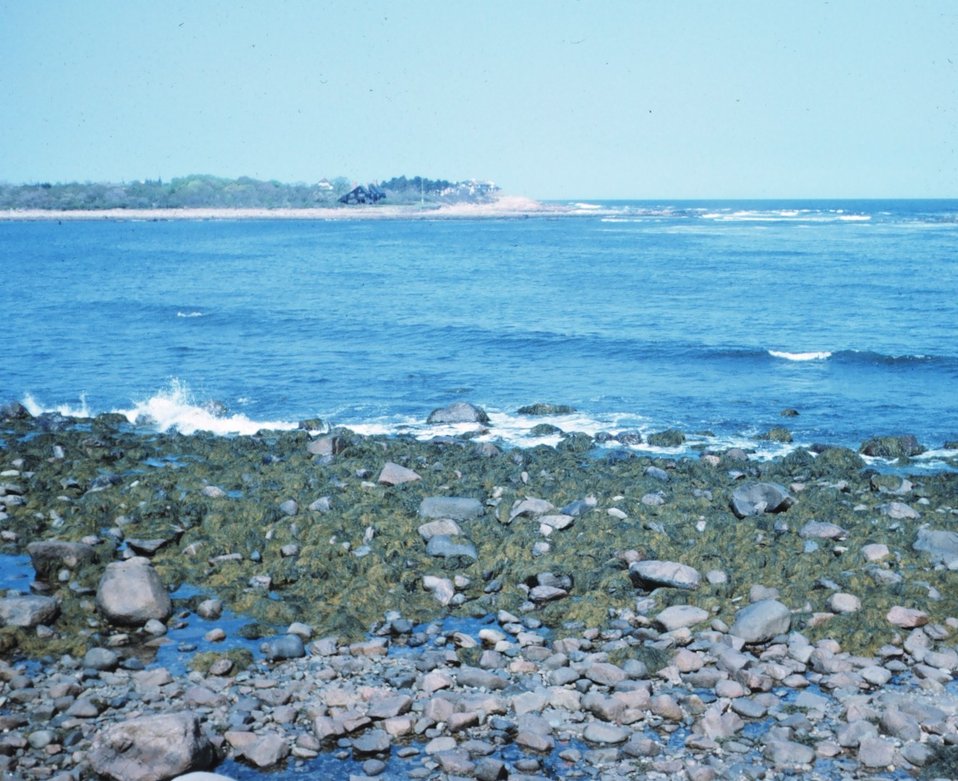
Rocky shoreline